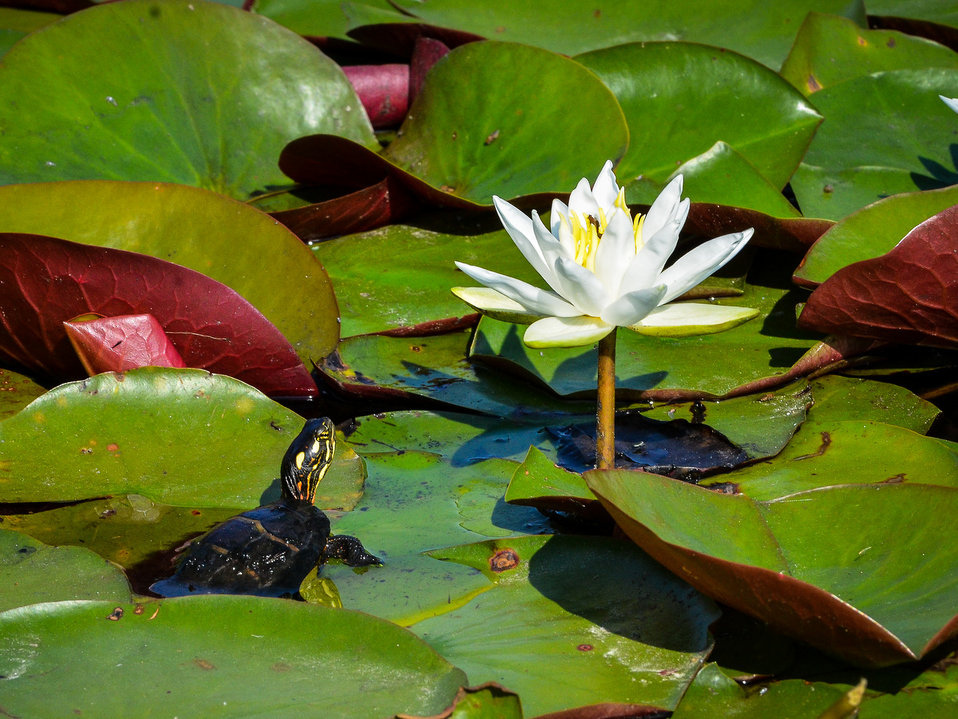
Painted turtle on lily pads at Edwin B. Forsythe National Wildlife Refuge.